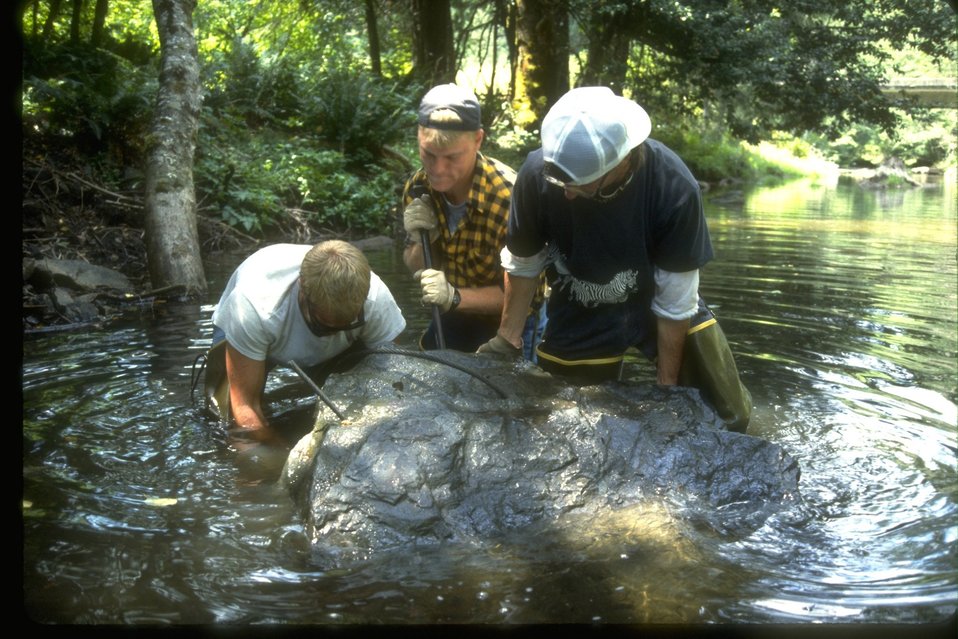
Fisheries volunteers working out in the stream.